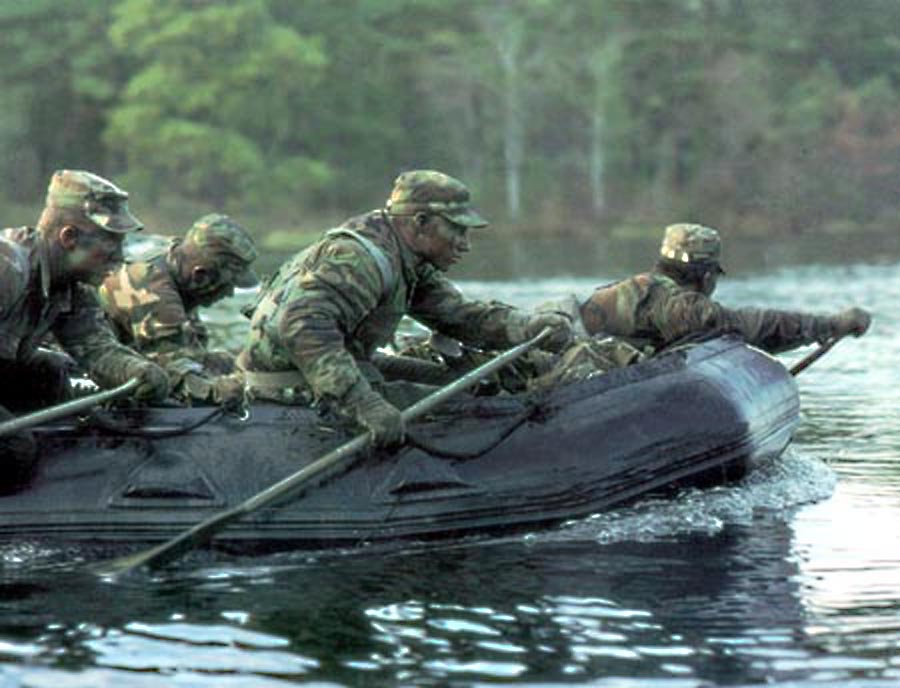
Zodiac

HURLBURT FIELD, Fla. -- Special tactics forces from here navigate their Zodiac in an undisclosed training location. Special Tactics is the Air Force's Special Operations ground combat force.